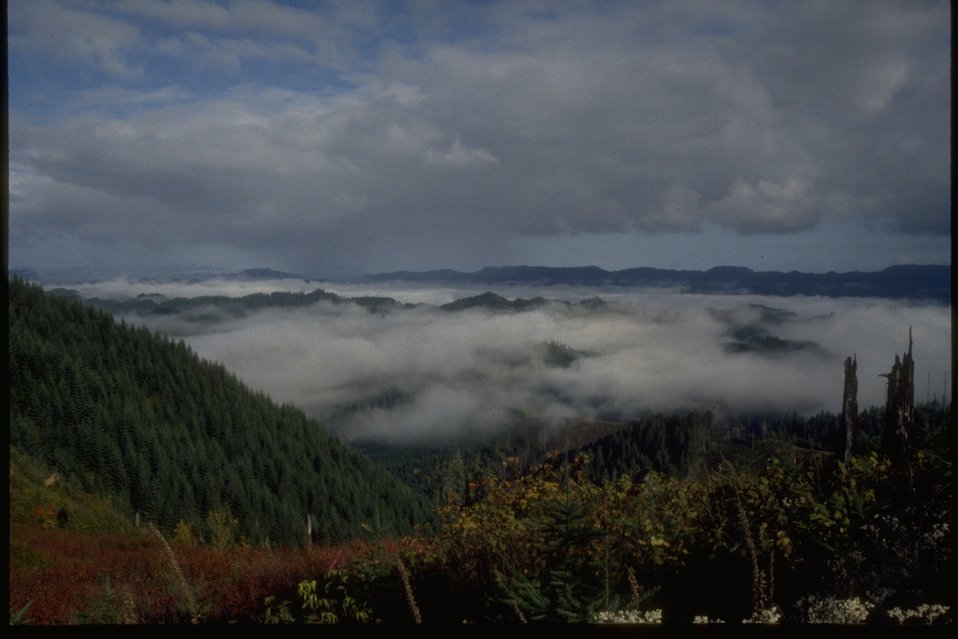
Scenic view of the coast range from Dunn Ridge.